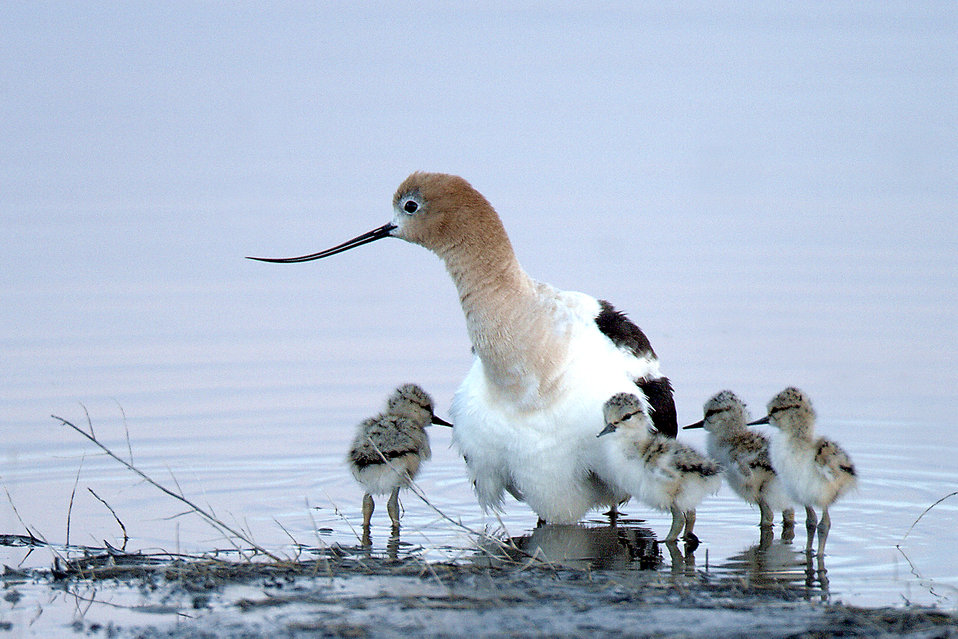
American Avocet & chicks on Malheur Refuge

American Avocet chicks stay close to a parent at Malheur National Wildlife Refuge. Most nesting and brooding occurs away from public access areas.